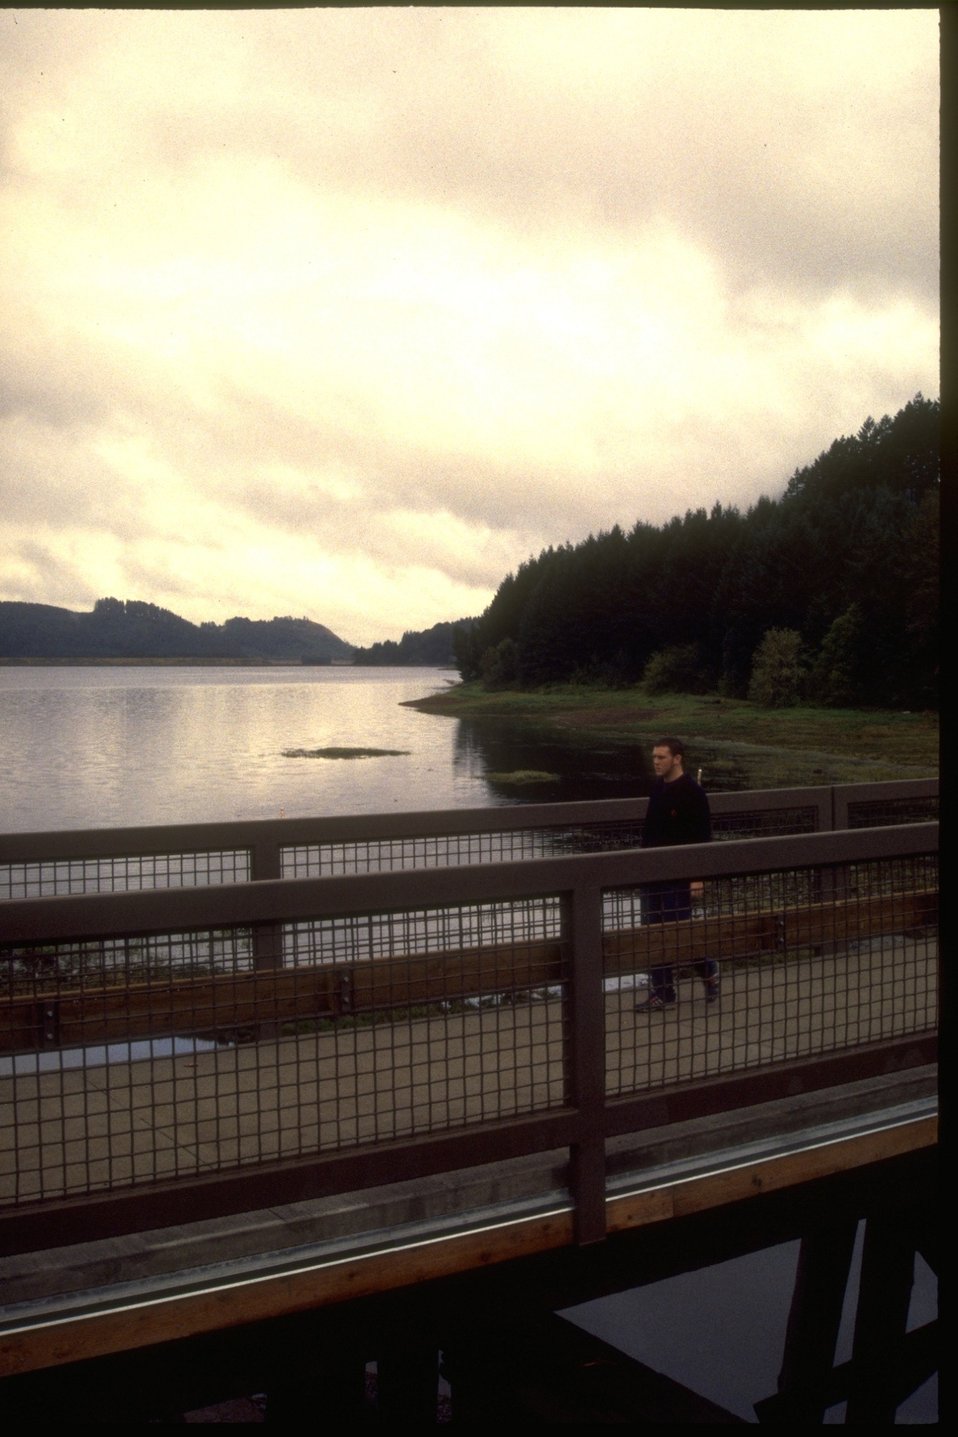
Hiker on the Row River Trail.